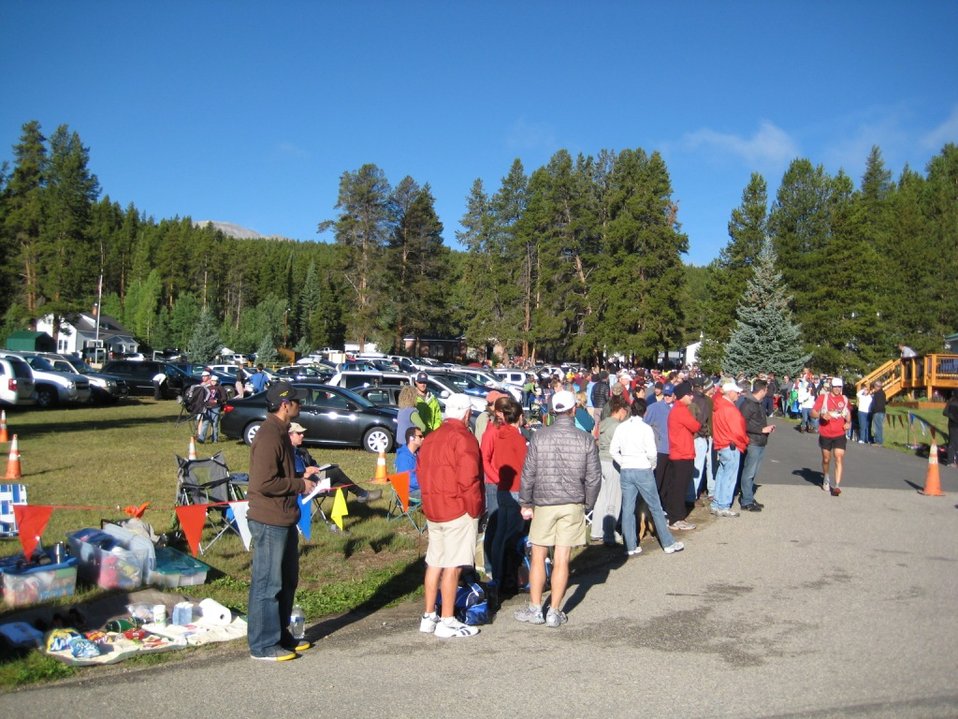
North entrance road of Leadville National Fish Hatchery lined with people. Spectators and supporters filled the hatchery for the Leadville Trail 100 run.